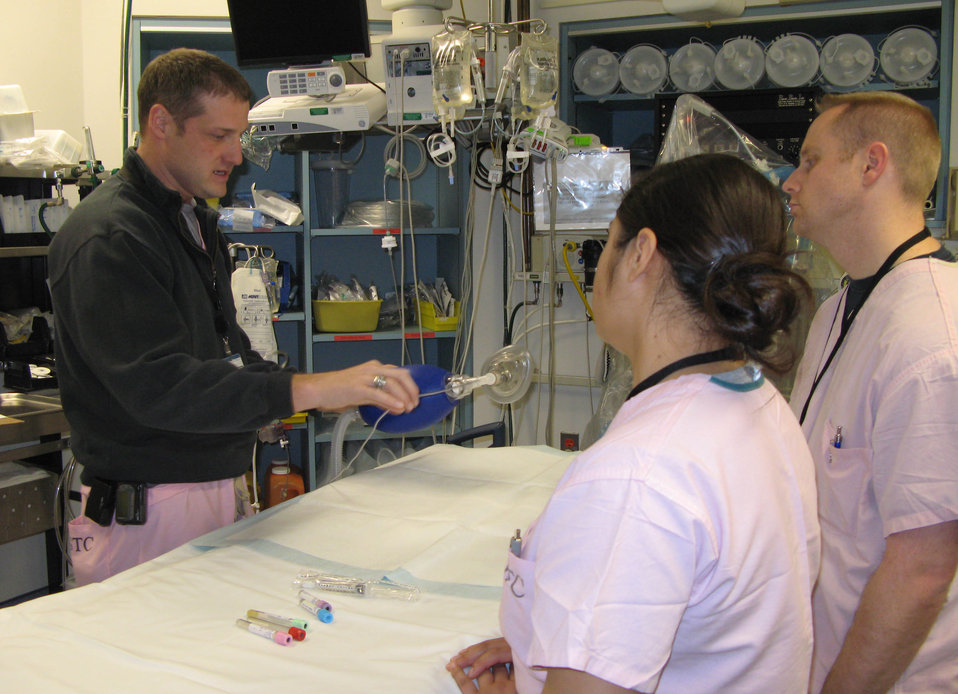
Pre-deployment trauma training

Master Sgt. Charles Halcome (left), an instructor for the Centers for Sustainment of Trauma and Readiness Skills program at the R. Adams Cowley Shock Trauma Center in Baltimore, reviews trauma-care procedures with studentsTech. Sgt. Josh Vest and Staff Sgt. Catalina Meissner on Feb. 1, 2012.